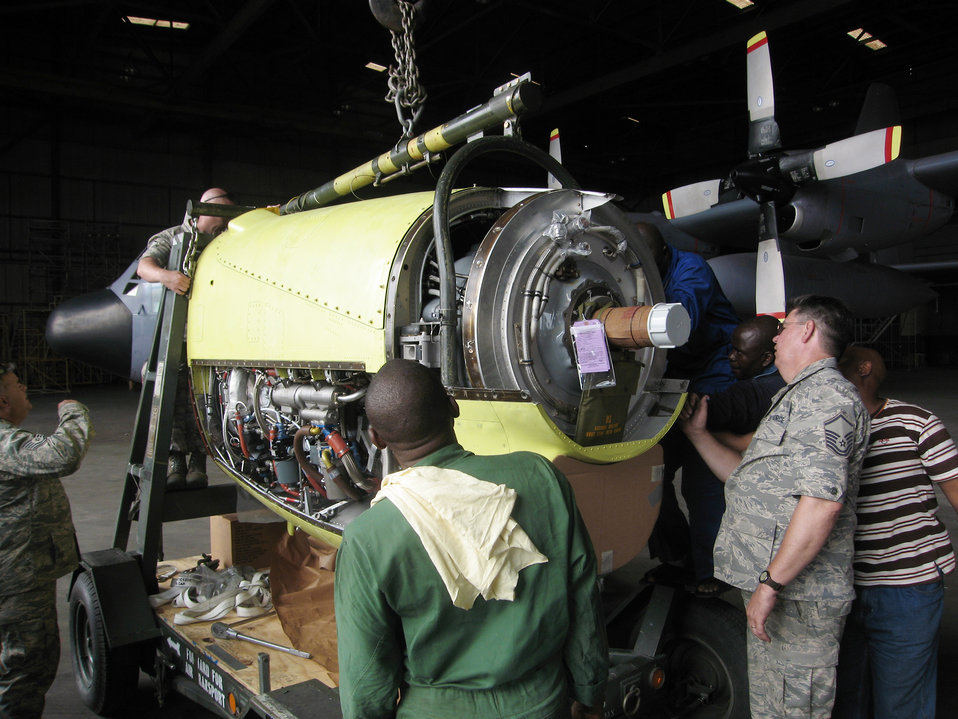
U.S. Air Forces Africa help Nigerian C-130 fly again

Master Sgt. Jim Goostree examines the engine from a Nigerian C-130 as part of an effort to restore the aircraft to flying condition. Once able to fly, it will go to a repair Depot in Europe for a more extensive overhaul. The mission is part of an ongoing military-to-military engagement between 17th Air Force (U.S. Air Forces Africa) and the West African nation. Sergeant Goostree is a member of the Tennessee Air National Guard's 118th Airlift Wing.